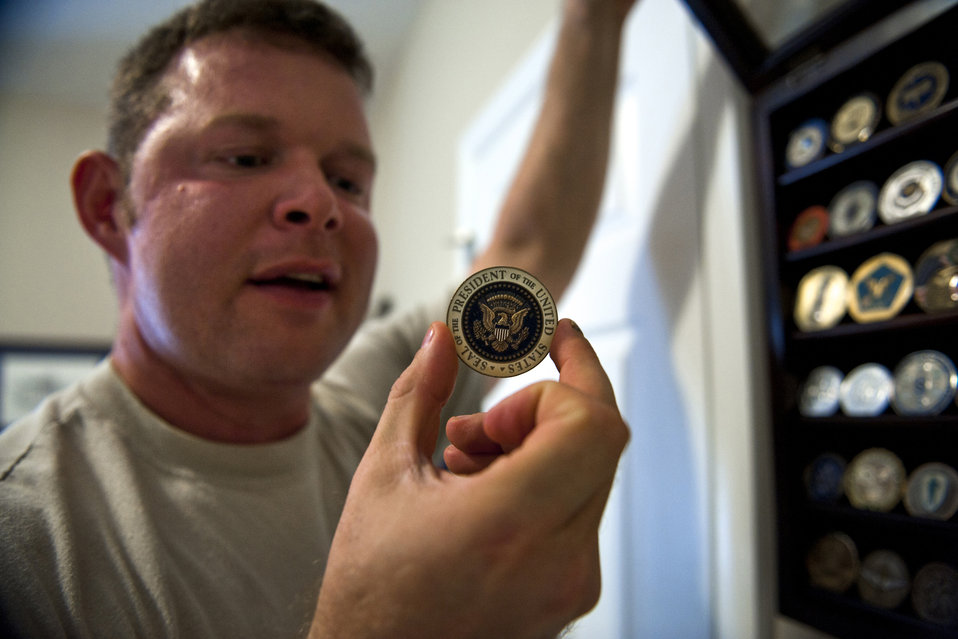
Master Sgt. Robert Disney shows off a coin at his home Feb. 24, 2011, that he received from President George W. Bush. Sergeant Disney earned it while performing personnel recovery alert for the president in 2004. Sergeant Disney is a 14-year pararescueman assigned to the 347th Rescue Group.